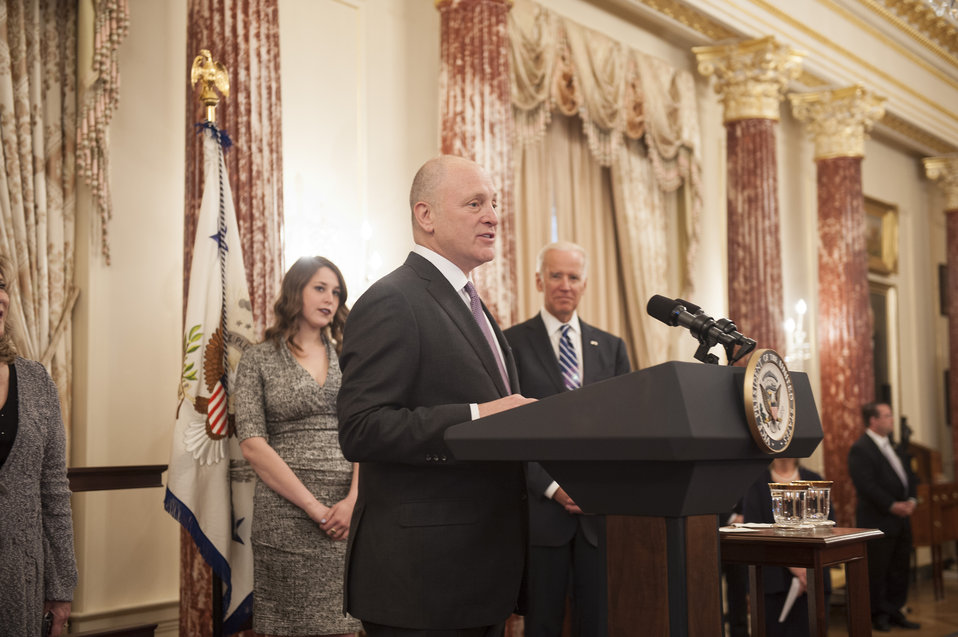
Ambassador Heyman Delivers Remarks at His Swearing-in Ceremony

With Vice President Joe Biden and his family looking on, U.S. Ambassador to Canada Bruce Heyman delivers remarks at his swearing-in ceremony at the U.S. Department of State in Washington, D.C., on March 26, 2014.